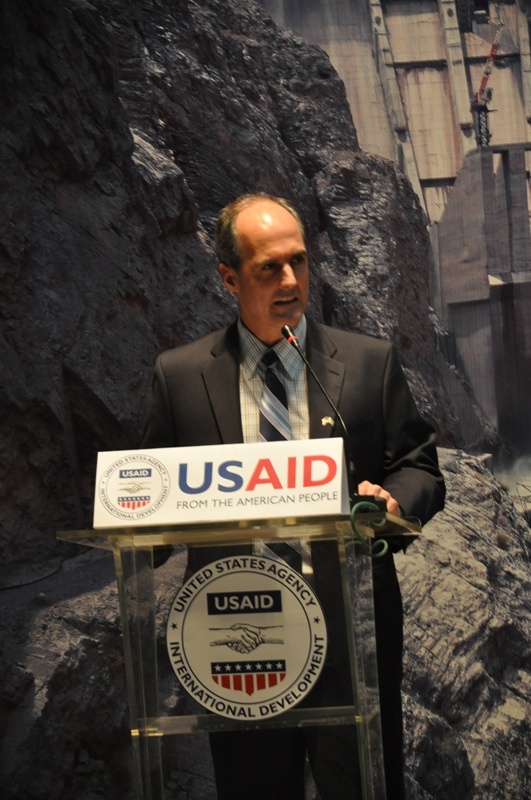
Provinicial Mission Director Punjab Ted Gehr giving remarks at the inaugural